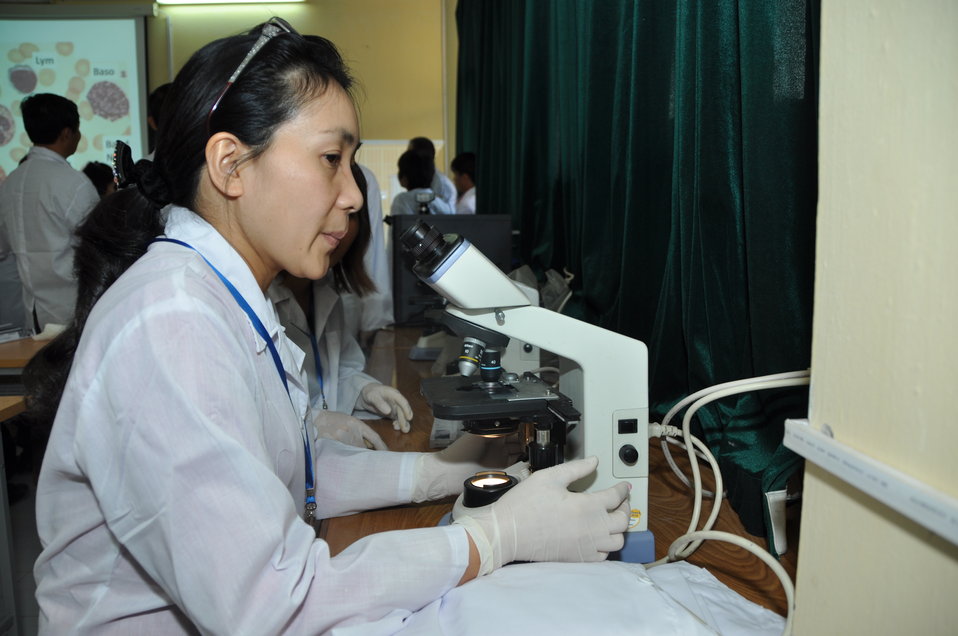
USAID EPT Smithsonian Pathology Training to Detect Emerging Infectious Diseases Wildlife and Other Animals in Vietnam Workshop